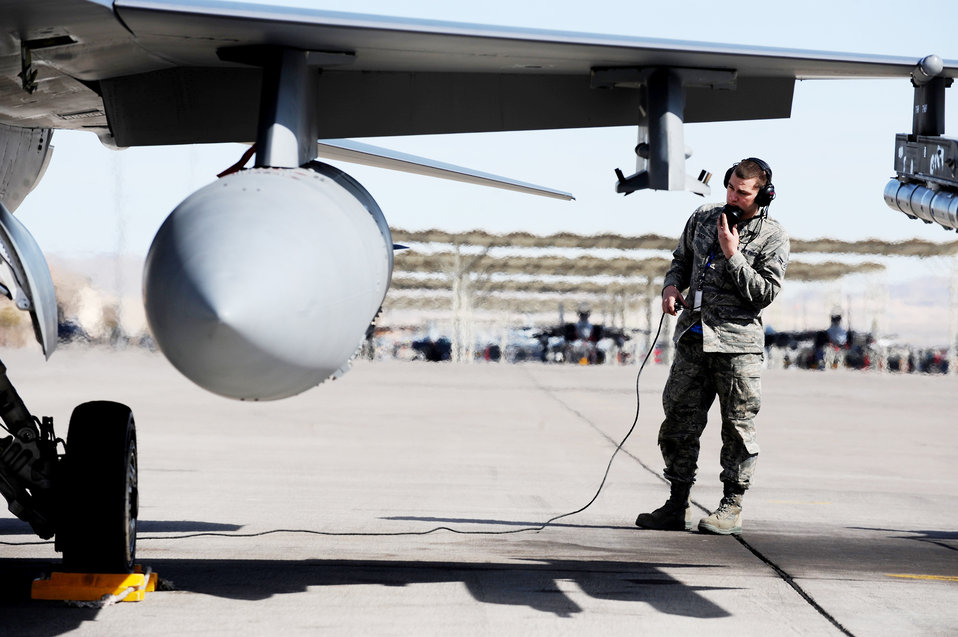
Ready to go

Airman 1st Class Joshua Koch completes a pre-flight check while communicating with the pilot of the F-16 Fighting Falcon before a training mission at Red Flag Feb. 23, 2010, at Nellis Air Force Base, Nev. Red Flag is a realistic combat training exercise involving the air forces of the United States and its allies. Airman Koch is a crew chief with the 20th Aircraft Maintenance Squadron at Shaw AFB, S.C.